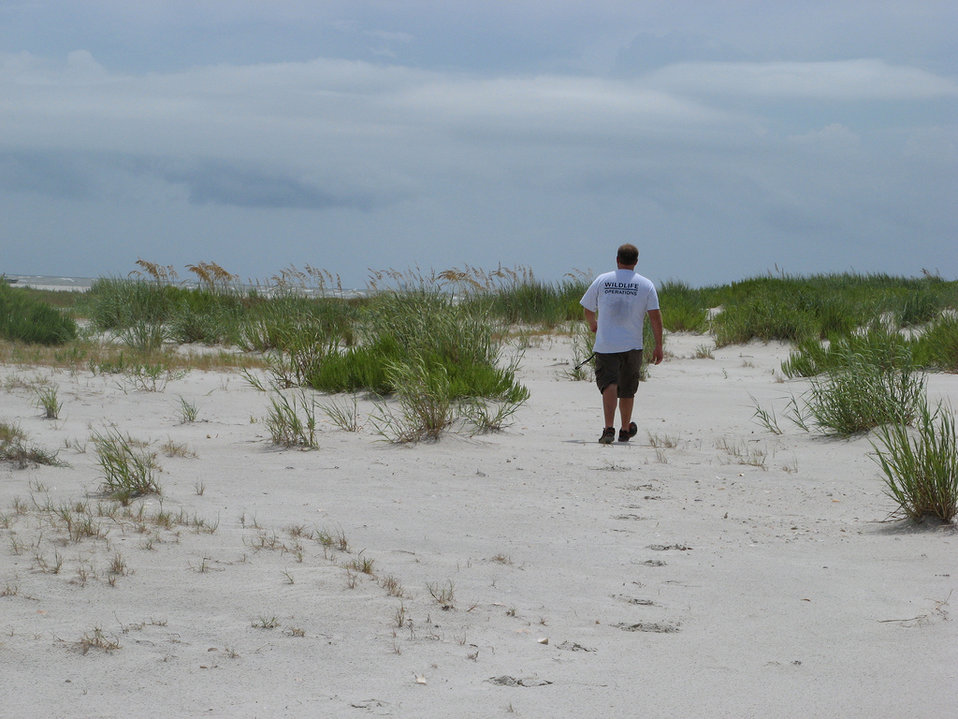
Wildlife Patrol Credit: Catherine Hibbard, USFWS